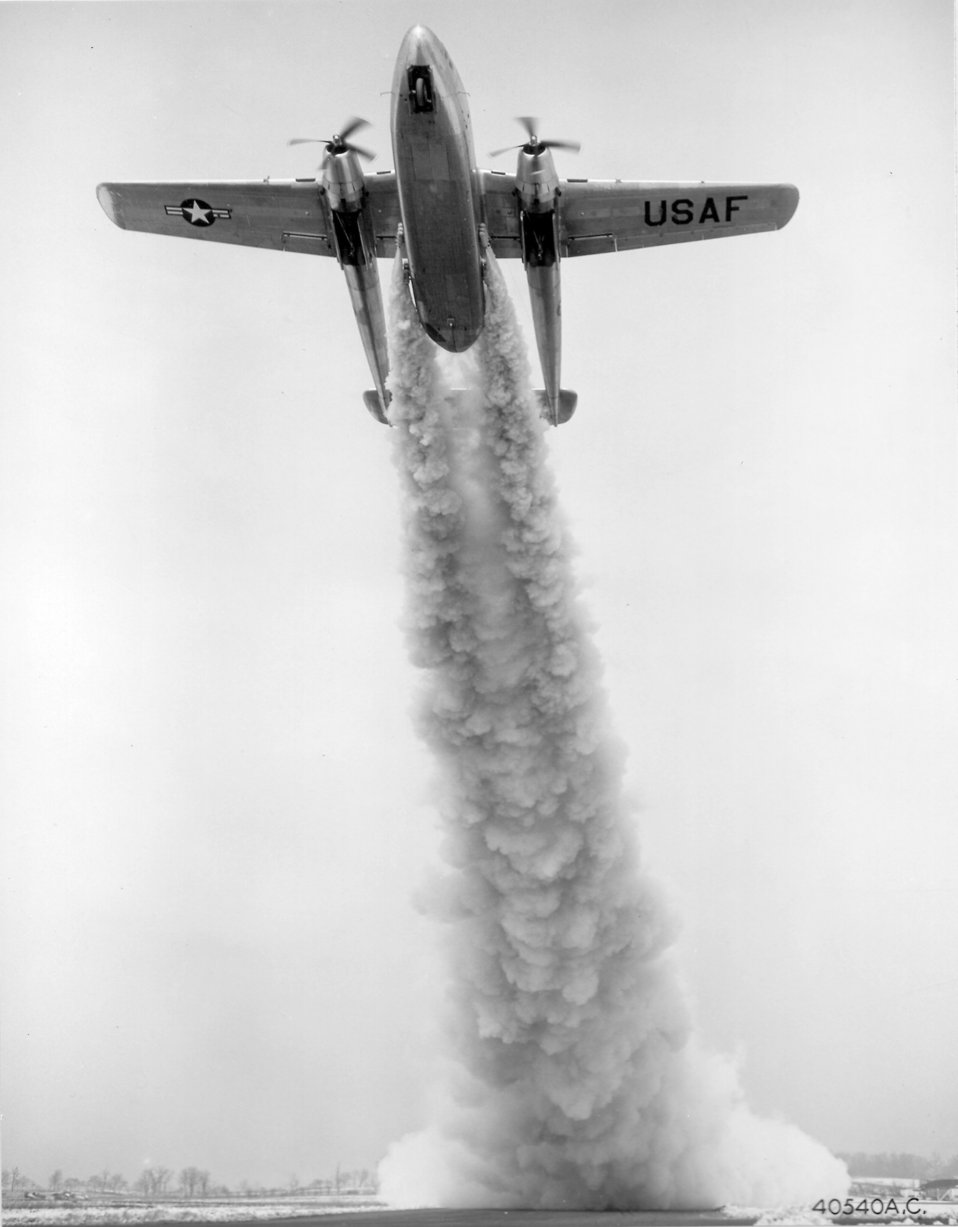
C-119

1940'S -- C-119